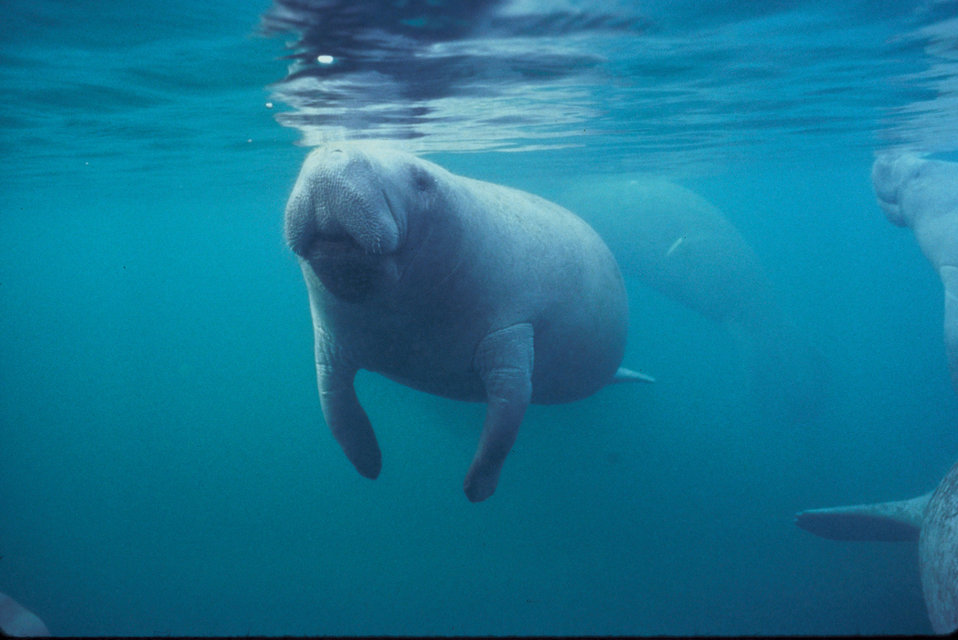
Florida Manatee.